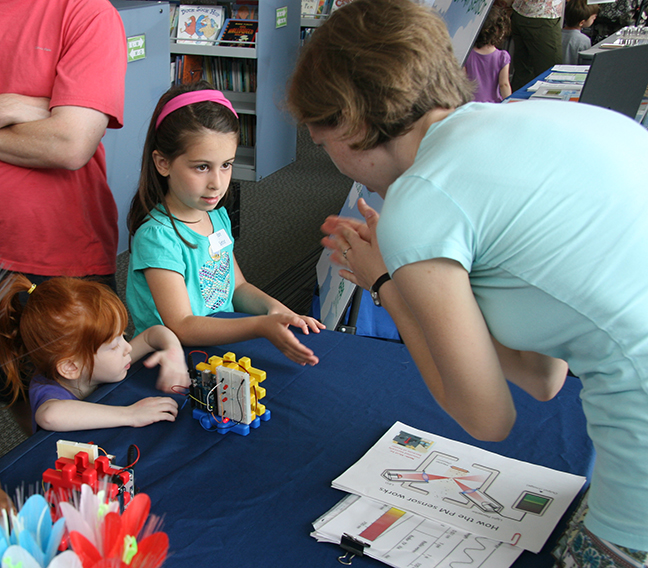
June 22 - Children building an air sensor

A volunteer guides two children with building an air sensor.